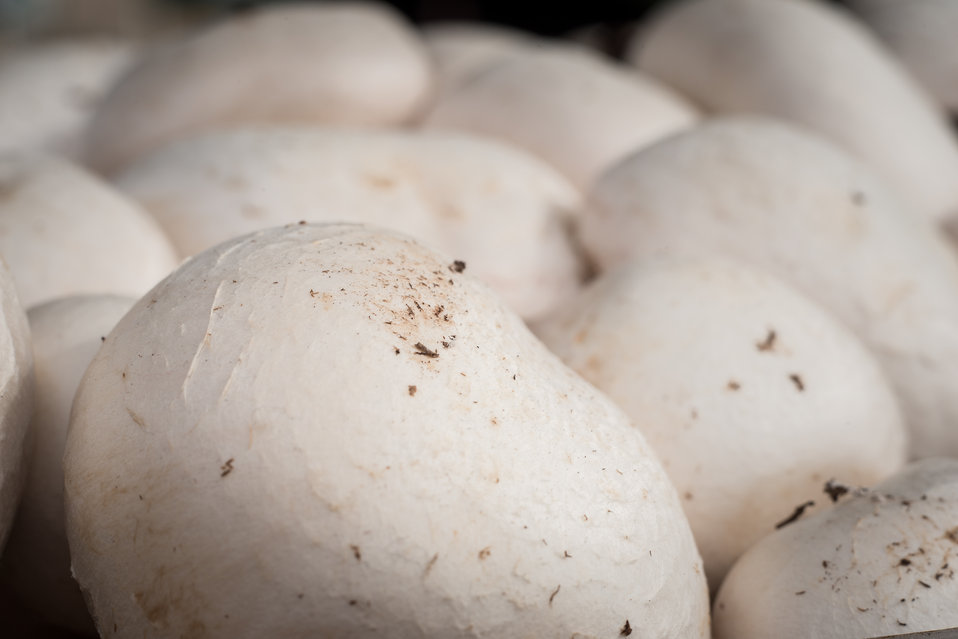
White button mushrooms on display at the U.S. Department of Agriculture (USDA) farmers markets and Harvest Festival at the USDA Whitten Building east parking lot in Washington, DC, on Friday, November 22, 2013.